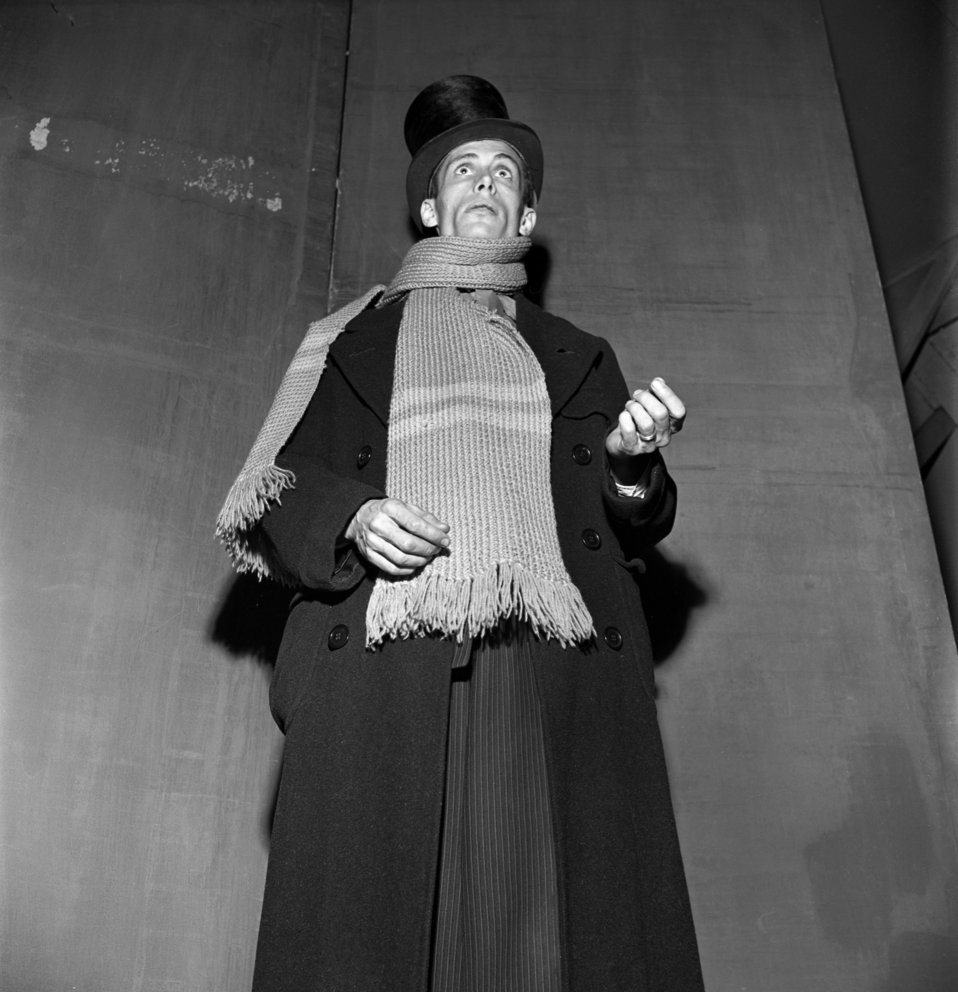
Community Playhouse 'Christmas Carol' Oak Ridge 1947

4067a DOE photo Ed Westcott 12-5-1947 Oak Ridge Tennessee